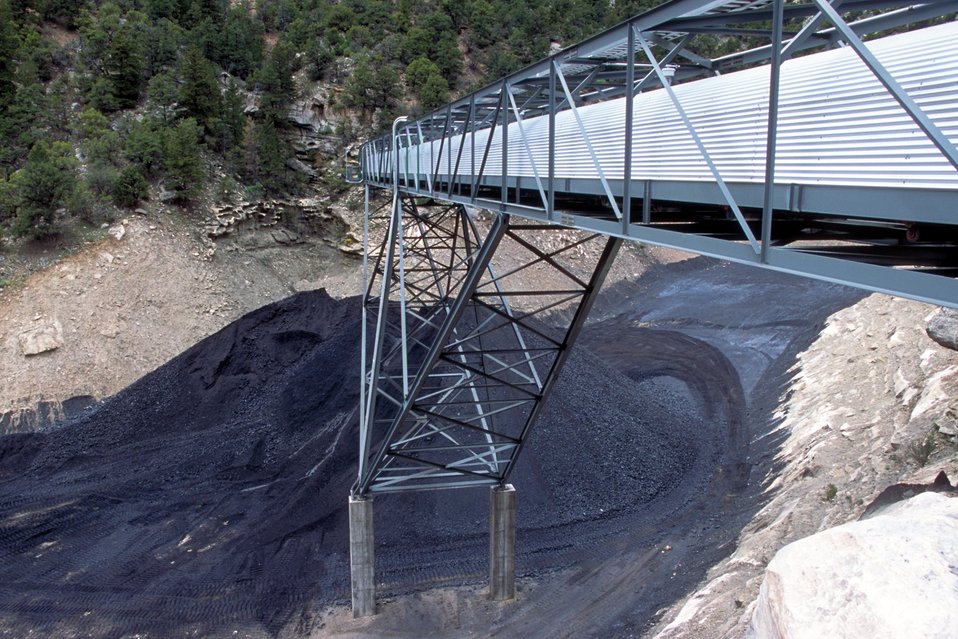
Coal production near Price, Utah.